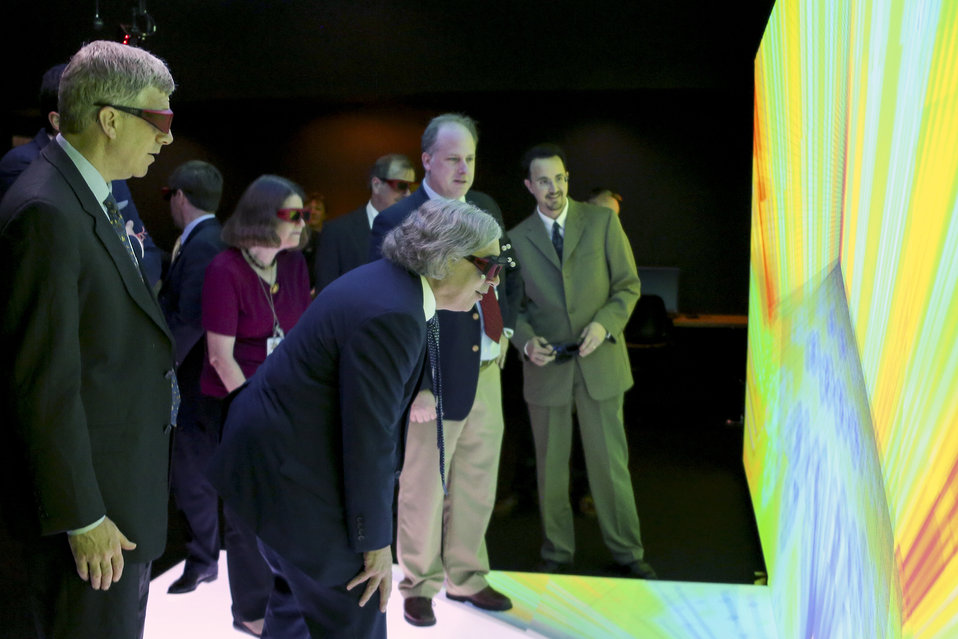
Photo of the Week: Improving Power Plant Technology… in 3-D

This week, Secretary Ernest Moniz experienced the 3-D visualizations at the Consortium for the Advanced Simulation of Light Water Reactors (CASL), one of the Department's Energy Innovation Hubs. The facility, located at Oak Ridge National Laboratory, develops computer models that simulate nuclear power plant operations. The researchers at CASL are developing technology that could accelerate upgrades at existing nuclear plants while improving the plants' reliability and safety.

Photo courtesy of Oak Ridge National Laboratory.

go.usa.gov/b9cP — in Oak Ridge, TN.